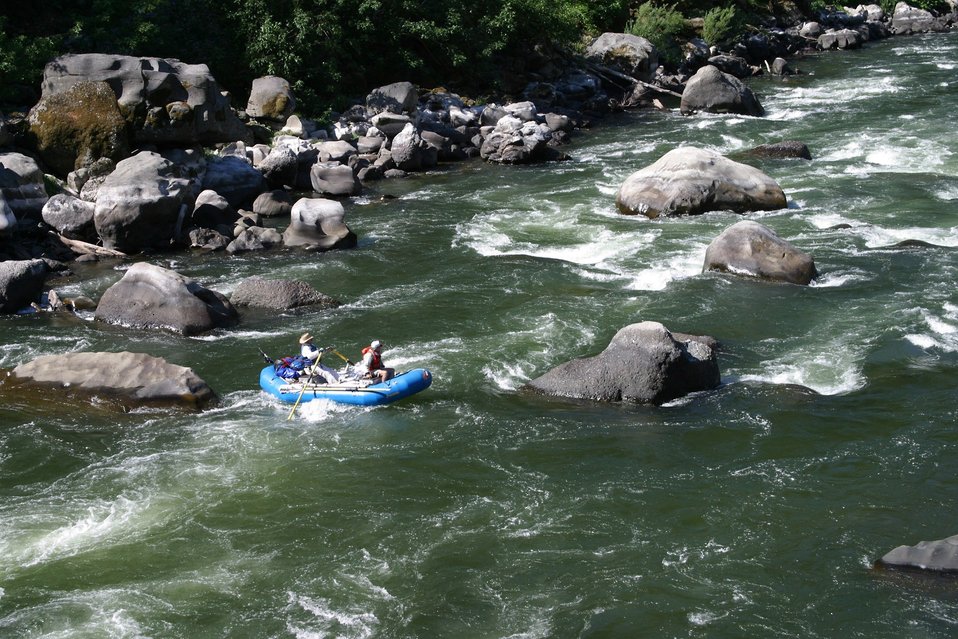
Blossom Rapids.